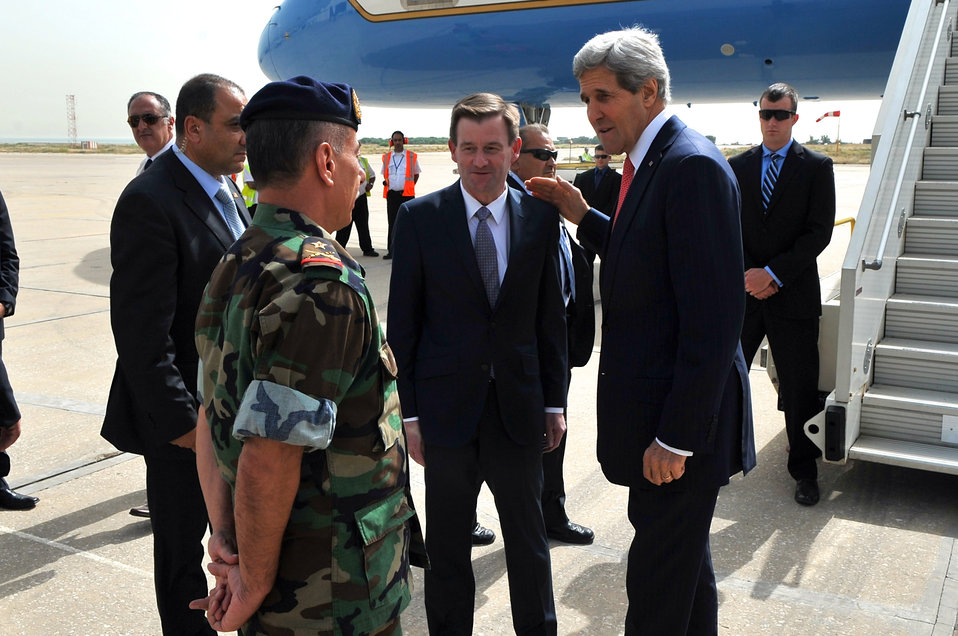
Secretary Kerry Is Greeted by Lebanese General Upon Arrival to Beirut

After being welcomed to Lebanon by U.S. Ambassador to Lebanon David Hale, U.S. Secretary of State John Kerry is greeted by the Lebanese general responsible for airport security upon his arrival to Beirut, Lebanon, on June 4, 2014.